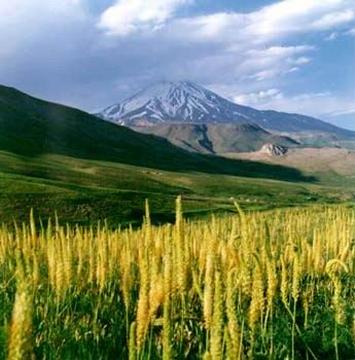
Mount Damavand, Iran. فارسی: کوه دماوند در ایران